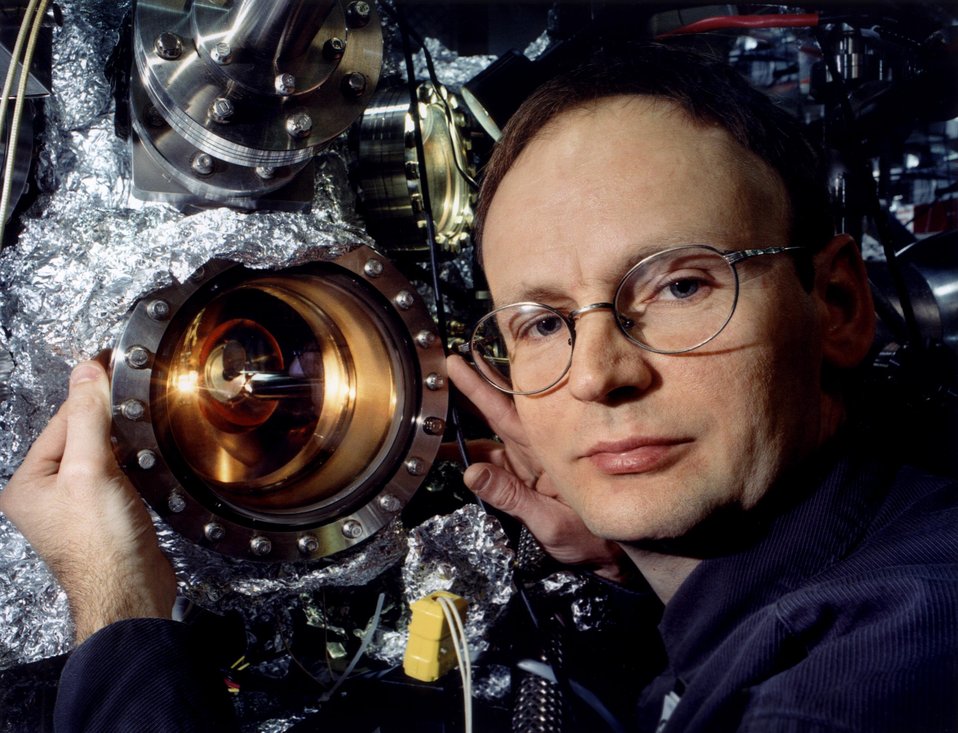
T. VALLA, BNL PHYSICS DEPT., EXPLORING ELECTRONIC STATES IN HIGH-TEMPERATURE SUPERCONDUCTORS.

THIS STUDY EXPLORED THE UNDERLYING MECHANISM FOR SUPERCONDUCTIVITY IN COPPER-BASED MATERIALS 'CUPRATES' THAT ACT AS HIGH TEMPERATURE SUPERCONDUCTORS. CONVENTIONAL SUPERCONDUCTORS MUST BE KEPT SUPER COLD BY SURROUNDING THEM WITH EXPENSIVE LIQUID HELIUM. CUPRATES, HOWEVER, ARE SUPERCONDUCTING AT TEMPERATURES 'WARM' ENOUGH TO BE CHILLED BY LESS EXPENSIVE LIQUID NITROGEN.